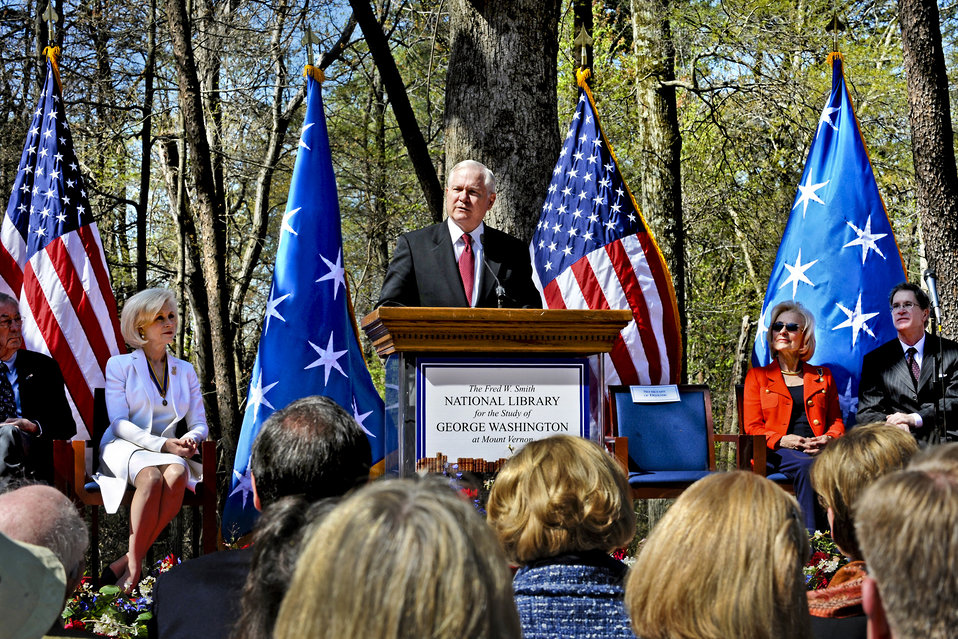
Secretary Gates address at Mount Vernon, Va.

Secretary of Defense Robert M. Gates delivers the keynote address at the April 14, 2011, groundbreaking ceremony for the George Washington presidential library at Mount Vernon, Va. His address centered on the need to balance idealism with realism.